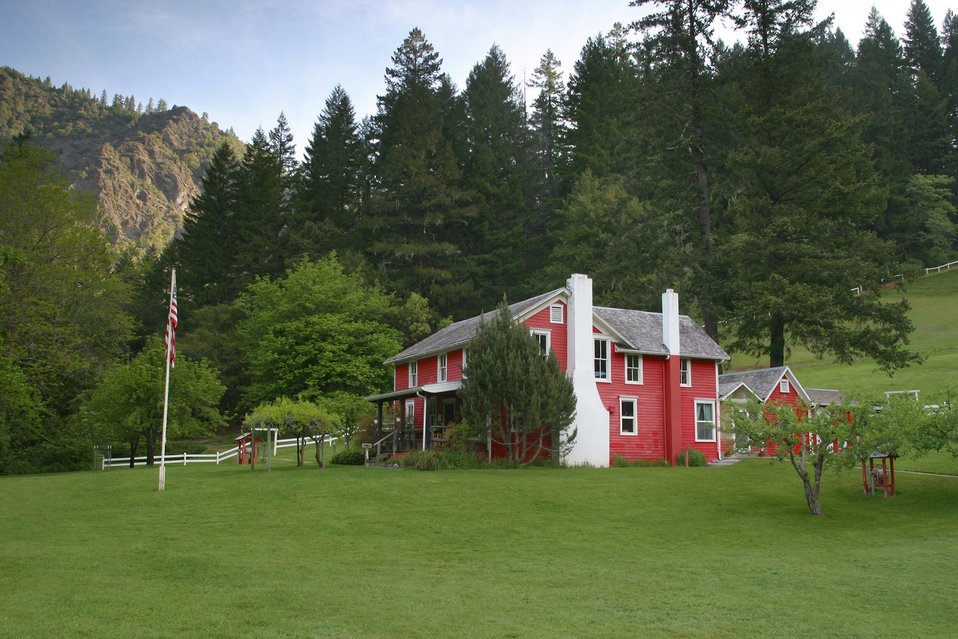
Wild section of the Rogue River from Grave Creek to Foster Bar May 19 to May 22.